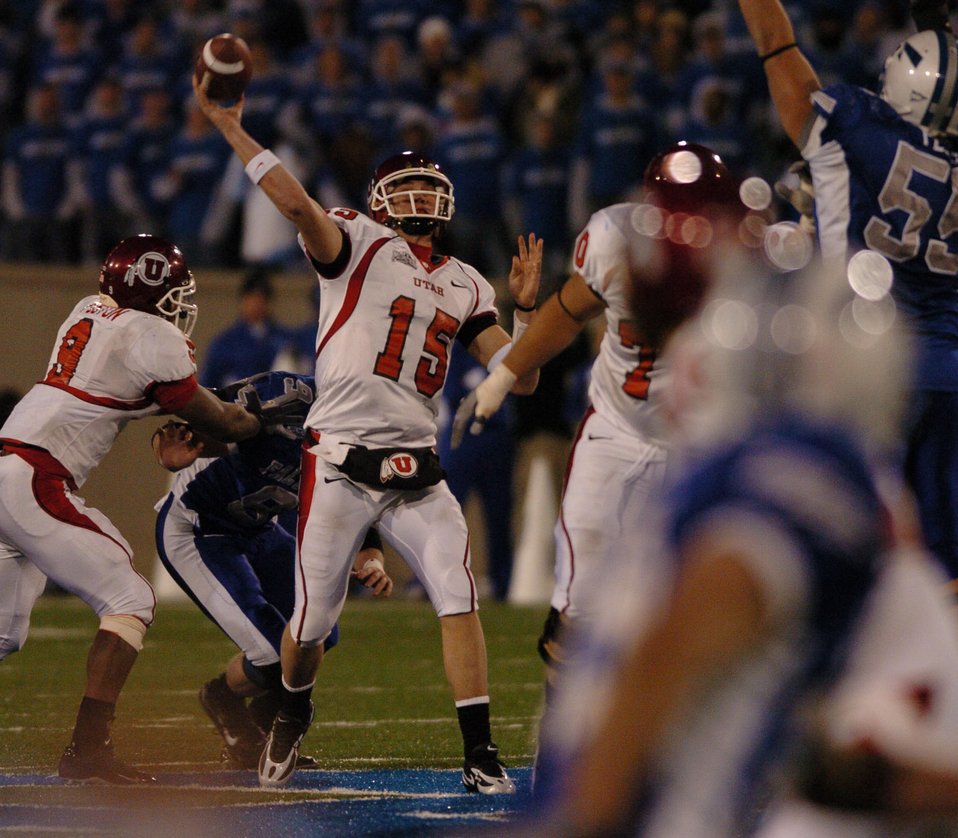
Throw Long

Utah quarterback Brett Ratcliff throws long to find receiver Freddie Brown, who was tackled four yards short of the Air Force goal line. Ratcliff was 24 of 38 on the day, throwing for 236 yards as Utah defeated Air Force, 17-14.